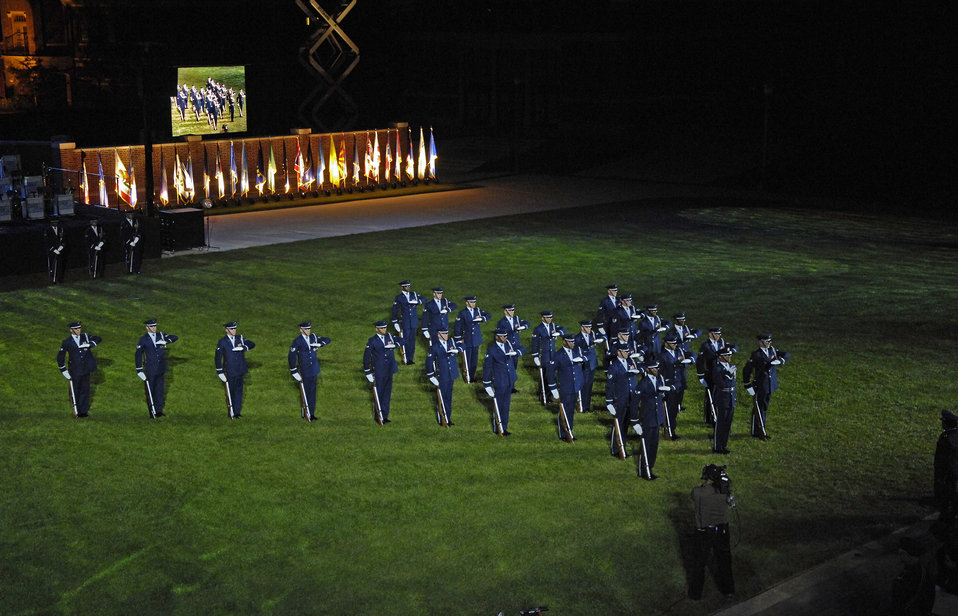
Air Force Tattoo

The Air Force Honor Guard Drill Team replicates the Air Force Memorial design on the Ceremonial Lawn during the Air Force Tattoo Sept. 23 at Bolling Air Force Base, D.C. The 2007 Air Force Tattoo, titled